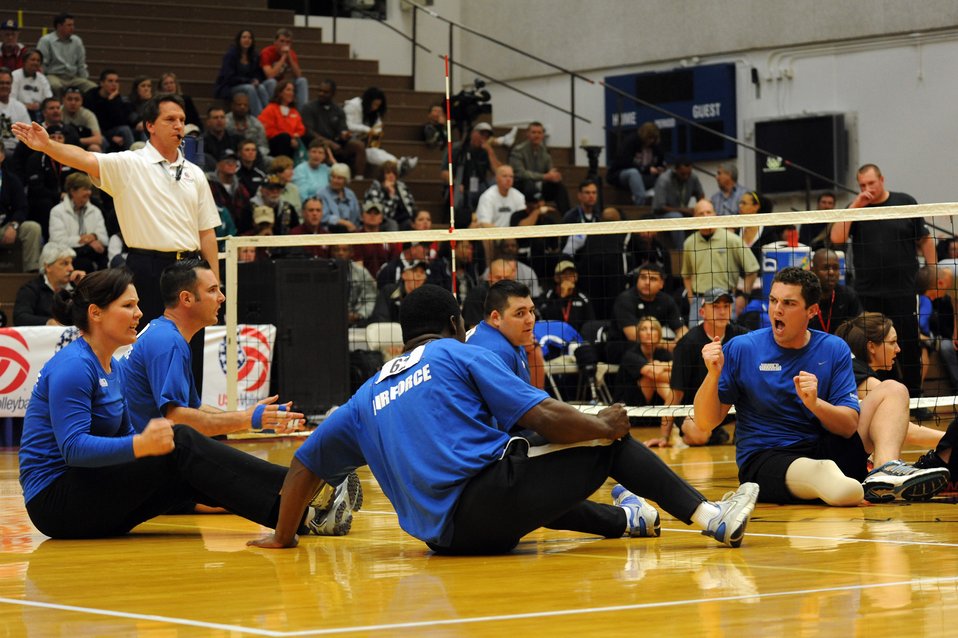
AF Volleyball wins Bronze at Warrior Games

Air Force Warrior Games athletes cheer as they make a point during the Warrior Games sitting volleyball match against Army at the U.S. Olympic Training Center in Colorado Springs, Colo., May 13, 2010.